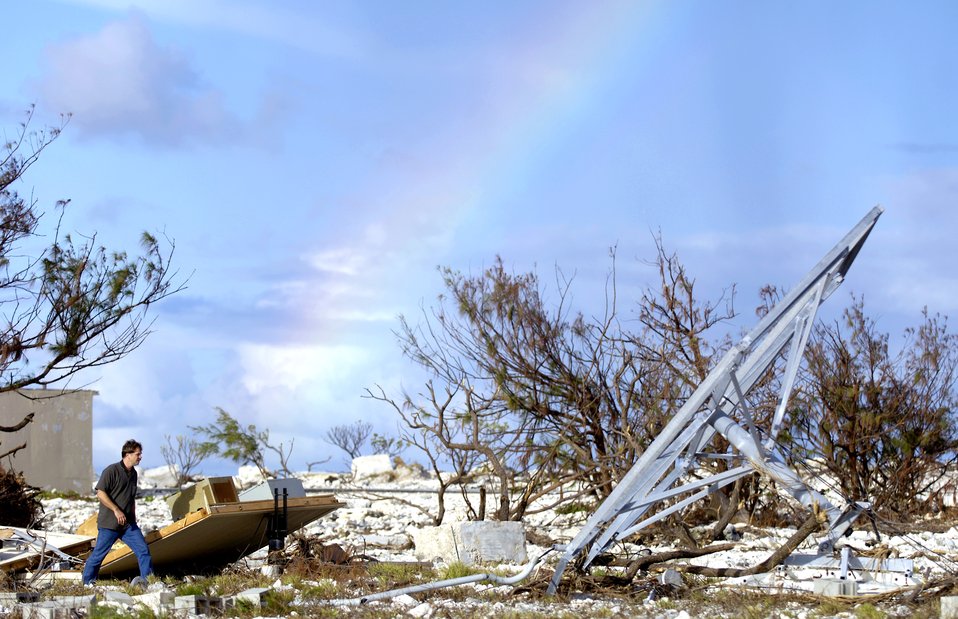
Teams fly to Wake Island to assess damage

A Defense Department employee surveys some of the damage left on Wake Island by Super Typhoon Ioke after it hit the island Aug. 31. A C-17 Globemaster III from Hickam Air Force Base, Hawaii, brought a 53-person team to assess damage left by the typhoon.